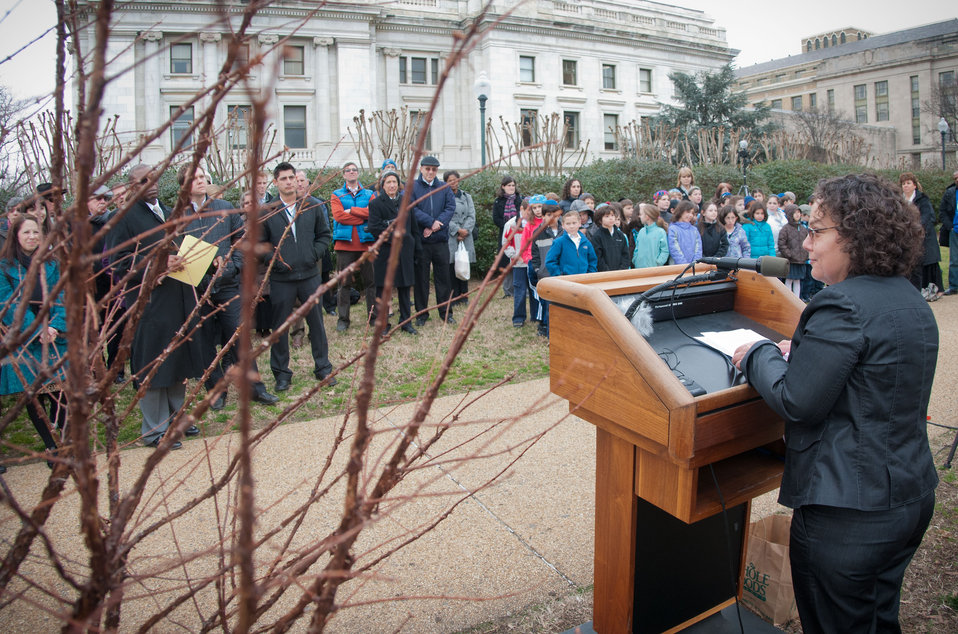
White House Council on Environmental Quality Chair Nancy Sutley (right), talked about how trees such as the freshly planted Dawn Redwood (next to her) are given to future generations to enjoy, and used today to celebrate Tu B’Shevat “The New Year of the Trees” on the District of Columbia western lawn next to the USDA Headquarters, Whitten Building at 14th Street and Independence Ave SW, in Washington, D.C. on Wednesday, February 8, 2012.